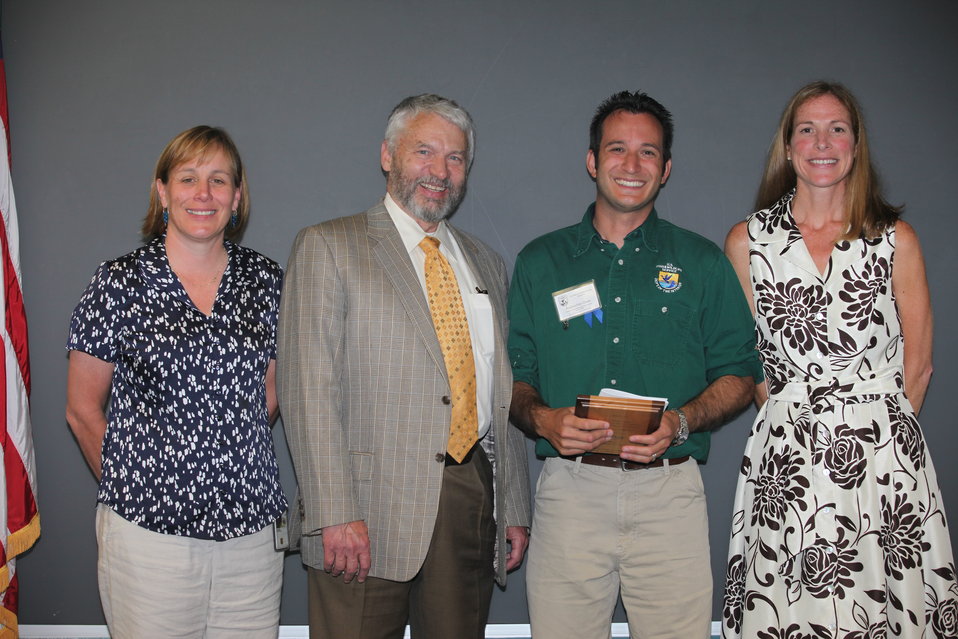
Juancarlos Giese, Rhode Island National Wildlife Refuge Complex, was another to recieve the Region 5 Unsung Hero Award.
From left to right: Deputy Regional Director Deb Rocque, Deputy Director Rowan Gould, Juancarlos Giese and Regional Director Wendi Weber